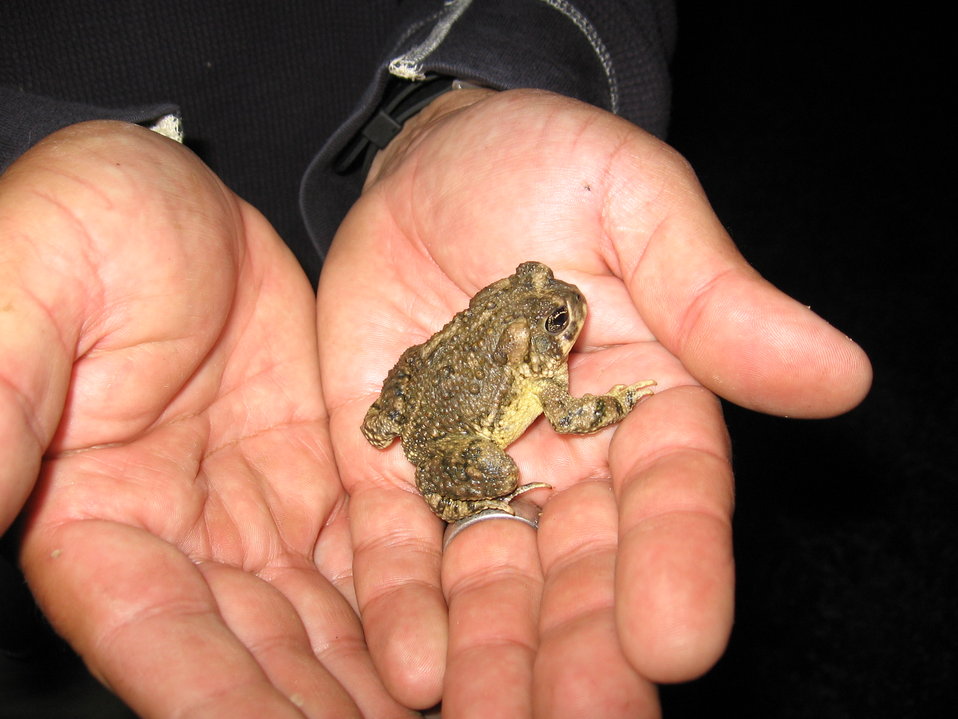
arroyo toad

This small, buff colored toad has a soft, high whistled trill that is often mistaken for the call of an insect. It was listed as endangered in 1994.